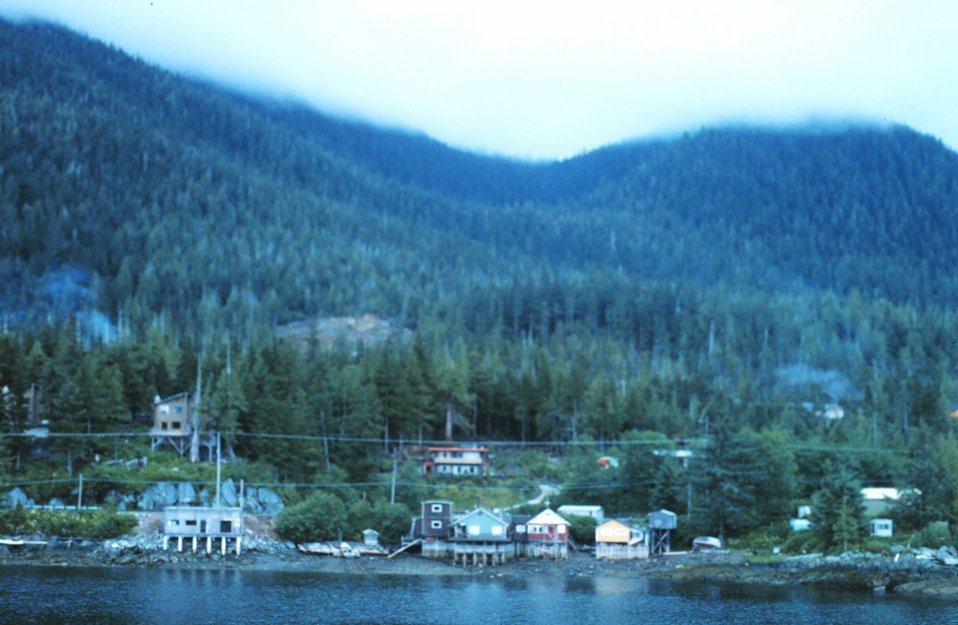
Taken from the NOAA Ship SURVEYOR